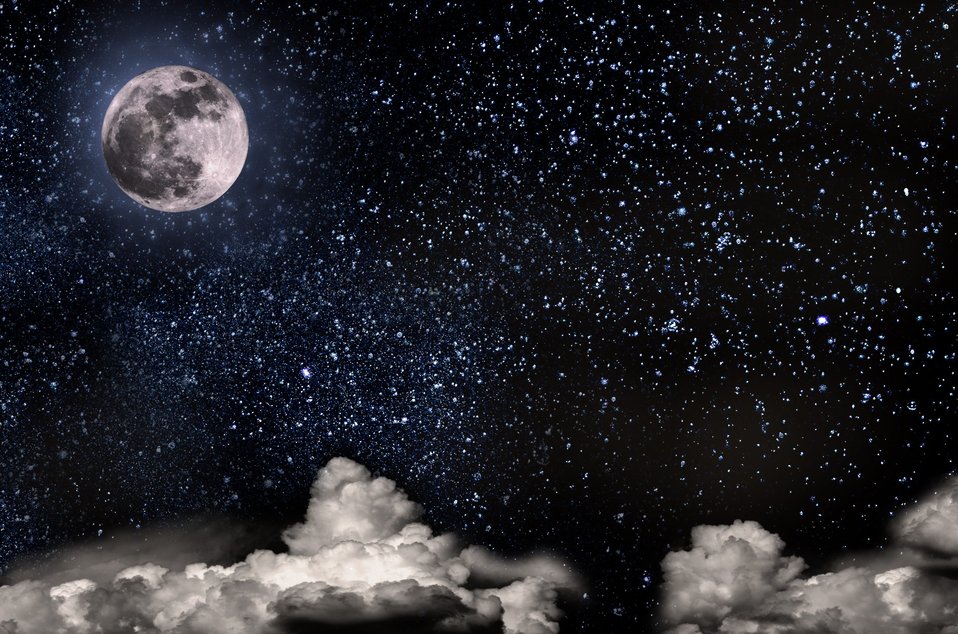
Nightly sky with large moon.